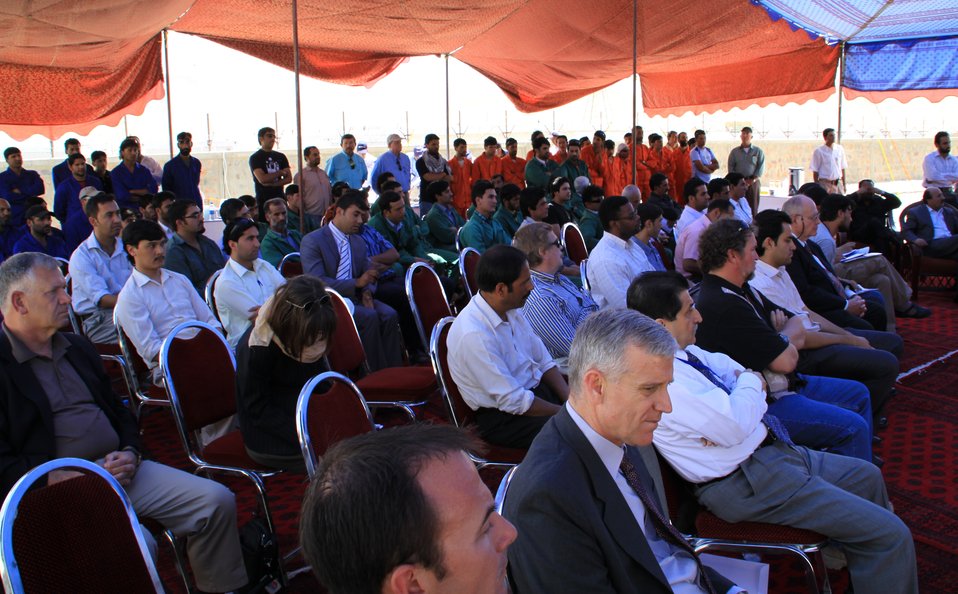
105 MW Tarakhil Power Plant Handover